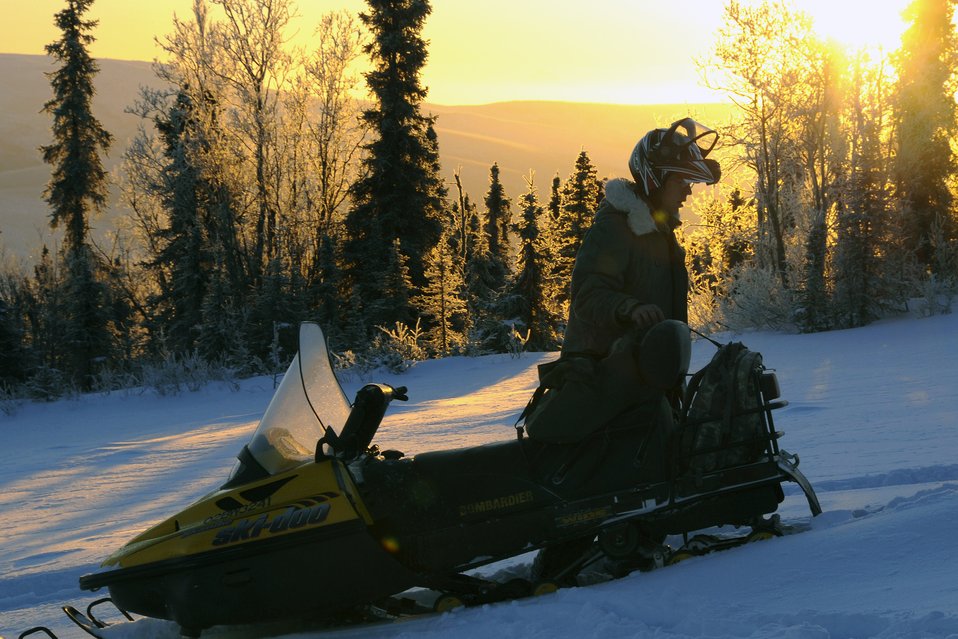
Need solar power

Staff Sgt. Stewart Raring removes a solar pathfinder from a snowmobile Dec. 16 at a remote operating facility in the Pacific Alaska Range Complex on Eielson Air Force Base, Alaska. The solar pathfinder will measure the intensity of sunlight to evaluate the feasibility of using solar panels here.